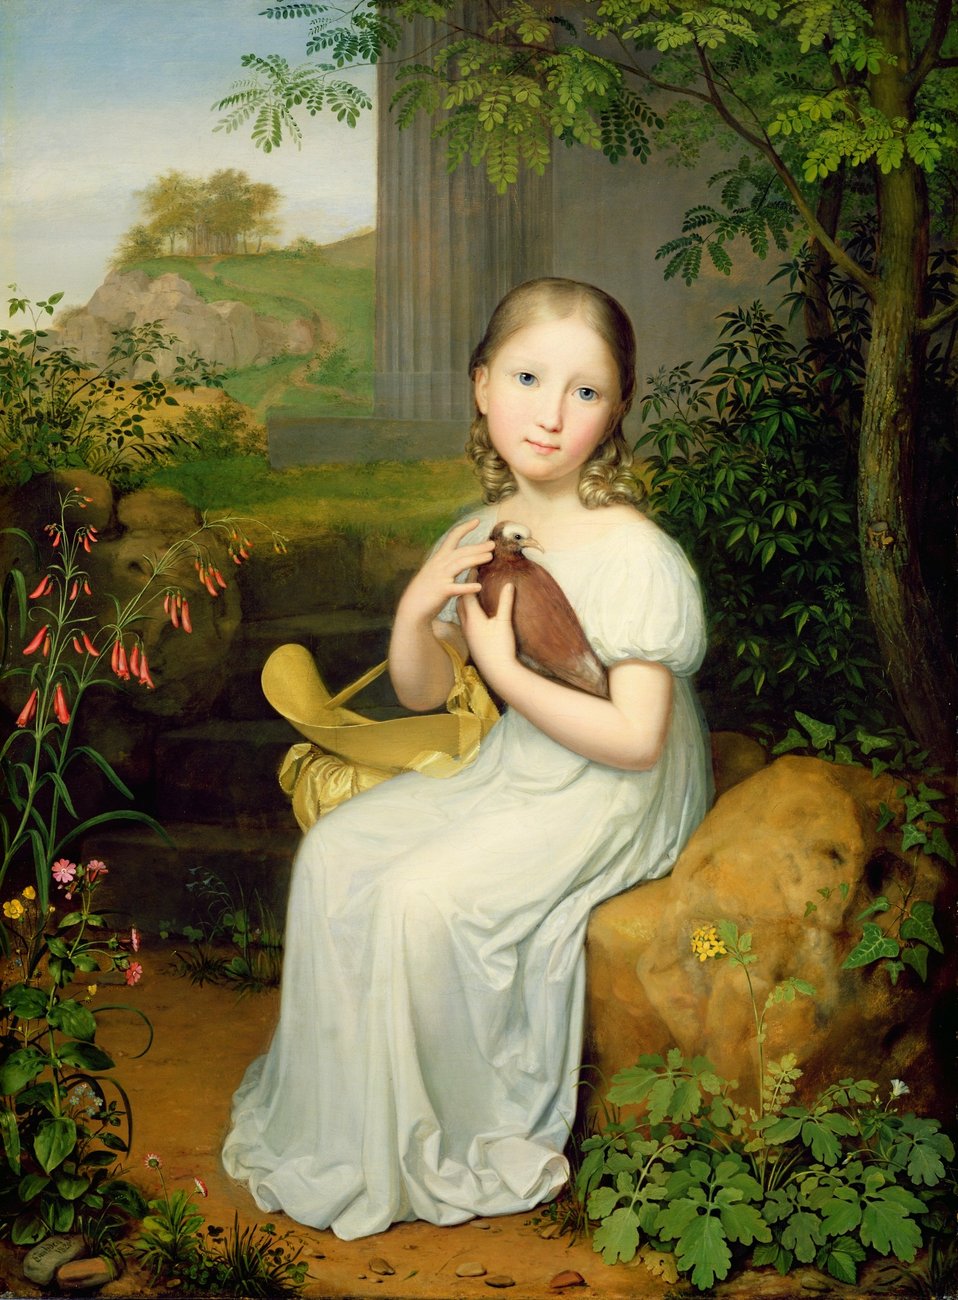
Luise von Bose